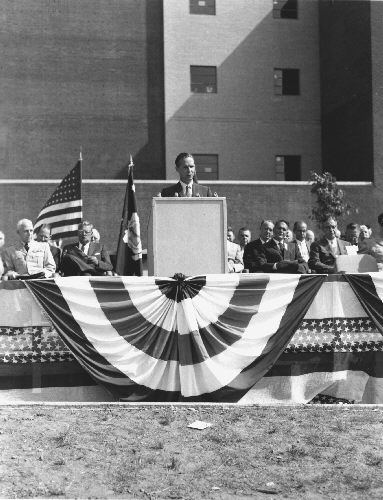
CDC Dedication Ceremony